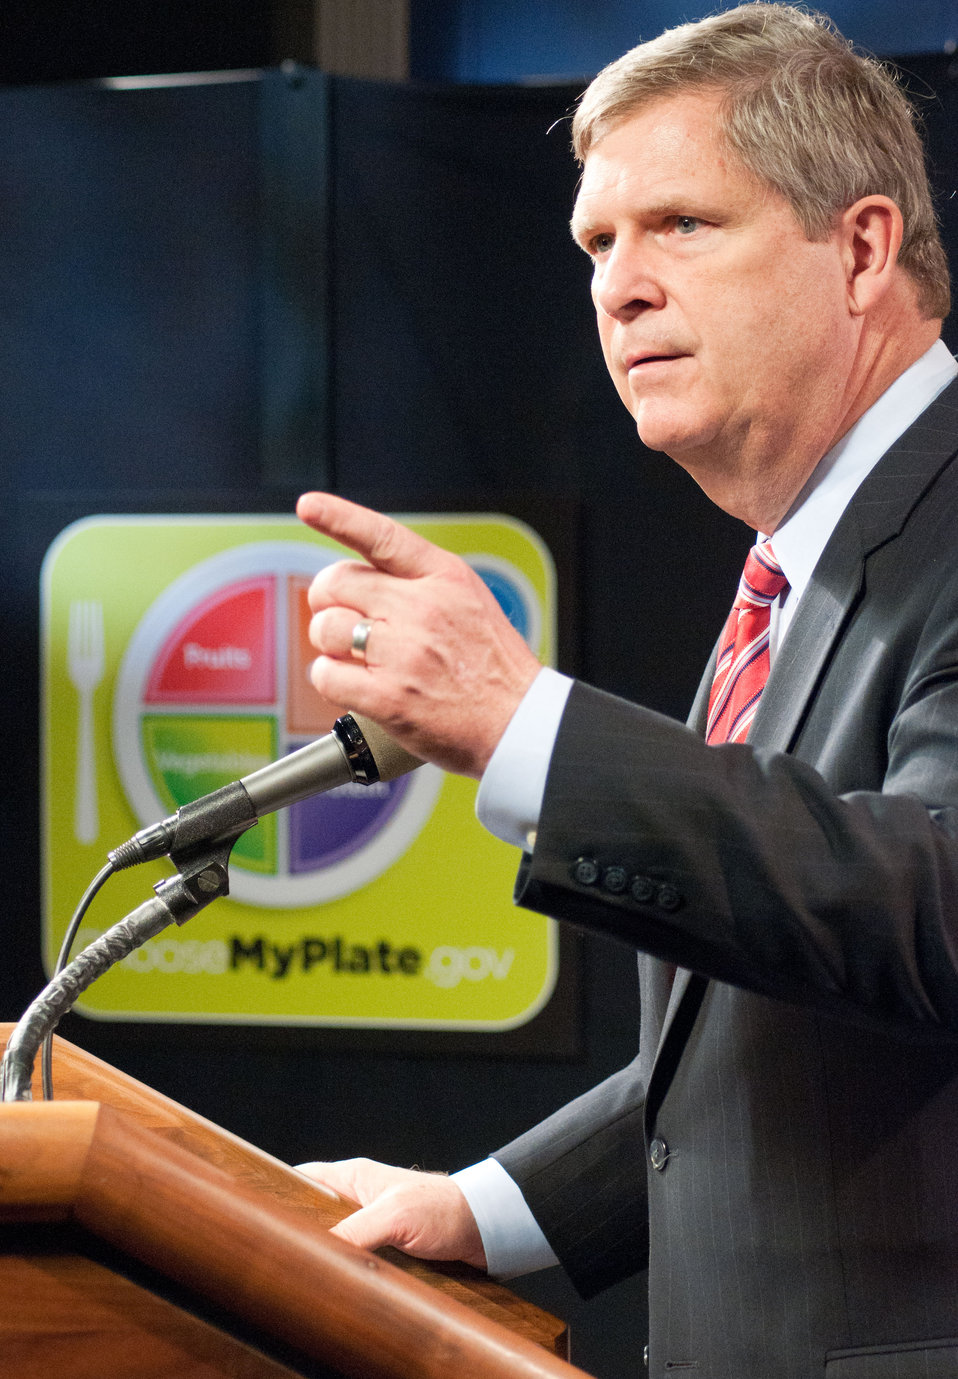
Agriculture Secretary Tom Vilsack responds to questions at a press conference at the announcement new food icon MyPlate that will serve as a reminder to help consumers make healthier food choices at the U.S. Department of Agriculture in Washington, D.C. on Thursday, June 2, 2011. MyPlate will be part of a comprehensive nutrition communication initiative that provides consumers with easy-to-understand recommendations, a new website with expanded information and other tools and resources.